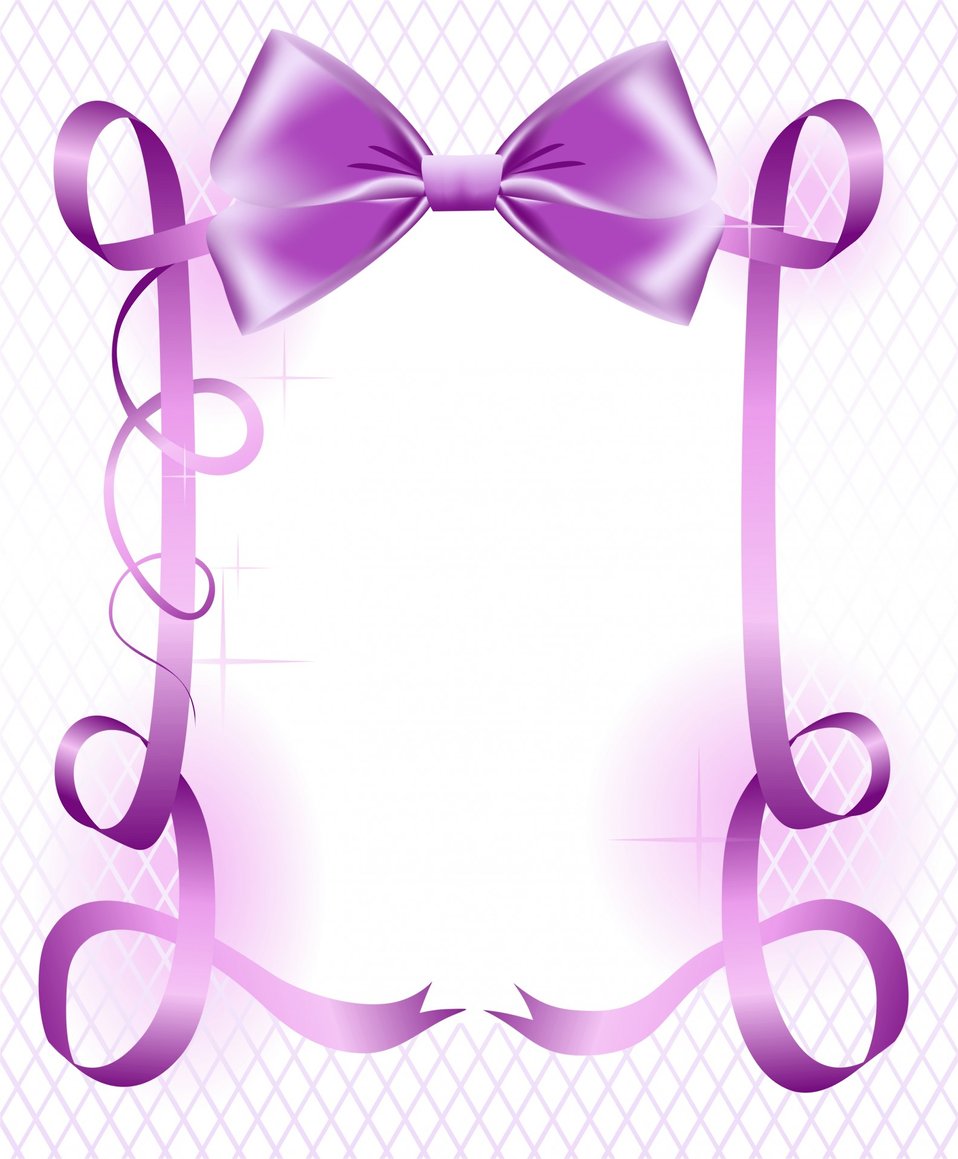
Abstract background for an inscription

Background with ribbons.